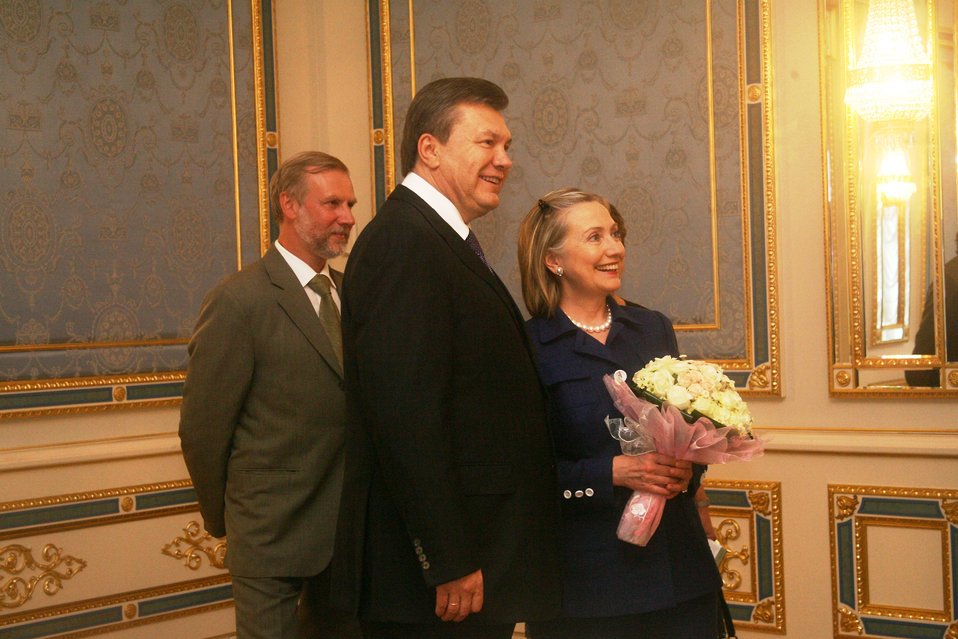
Secretary Clinton Meets With Ukrainian President

U.S. Secretary of State Hillary Rodham Clinton poses for a photo with Ukrainian President Viktor Yanukovych in Kyiv, Ukraine, on July 2, 2010.